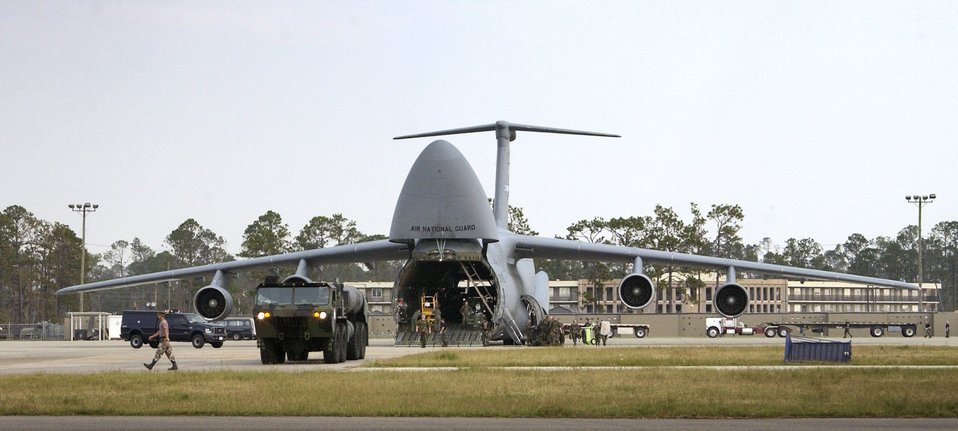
More relief on the way

GULFPORT, Miss. -- A C-5 Galaxy from the New York Air National Guard's 105th Airlift Wing sits on a ramp at the combat readiness training center here as Airmen with the 137th Airlift Squadron unload a cargo bay full of support vehicles and equipment. The equipment will be used for Hurricane Katrina relief operations.